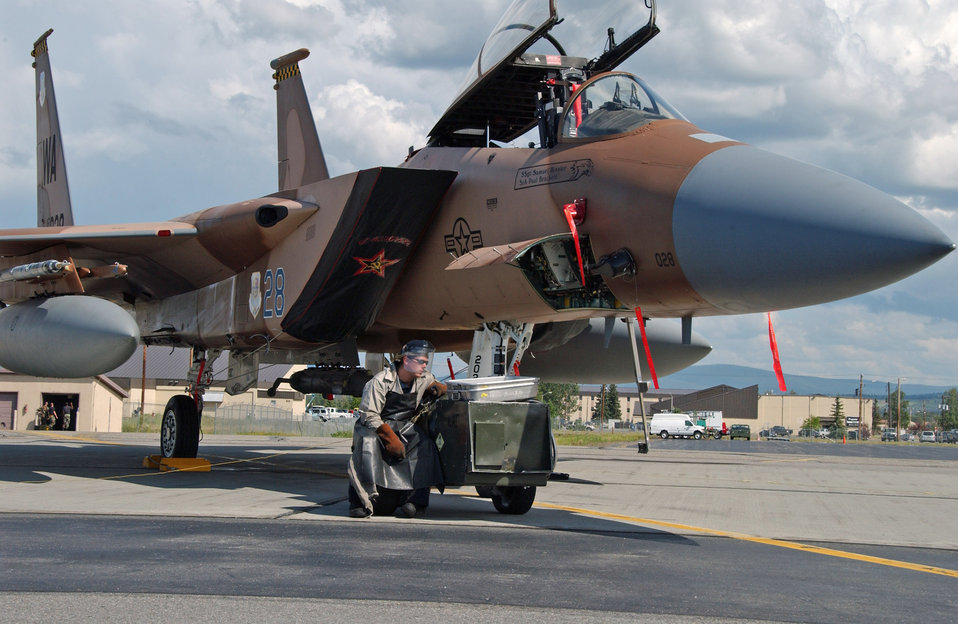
Red Flag-Alaska 07-3

Airman 1st Class Zachary Garretson services the liquid oxygen system on an F-15 Eagle July 9 on the Eielson Air Force Base, Alaska, flightline. The aircraft, from the 65th Aggressor Squadron at Nellis AFB, Nev., is at Eielson AFB to take part in Red Flag-Alaska 07-3, a multi-service, multi-platform coordinated, combat operations exercise, which runs through the July 27. Airman Garretson is a maintainer with the 57th Aircraft Maintenance Squadron at Nellis AFB.